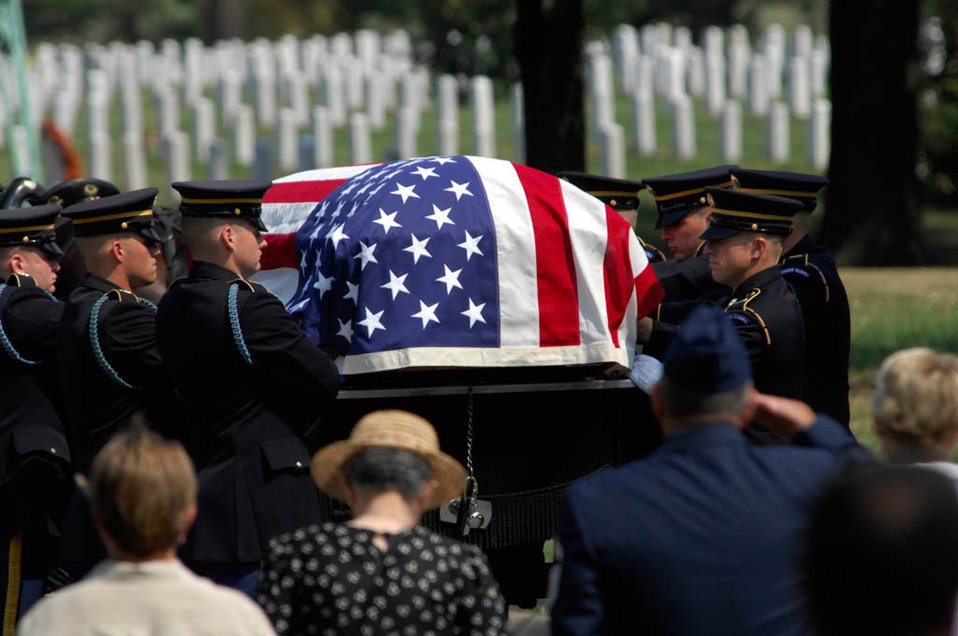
World War II B-24 pilot's remains laid to rest at Arlington

Army Color Guard members carry the casket of 2nd Lt. Harold E. Hoskin into the Fort Myer Old Post Chapel before the start of his funeral procession Sept. 7 at Arlington National Cemetery in Virginia. Lieutenant Hoskin was one of five men who were flying in a B-24 Liberator that crashed while on a test flight Dec. 21, 1943, out of Ladd Field in Fairbanks, Alaska. Lieutenant Hoskin's remains were discovered in August 2006 and identified in April 2007.